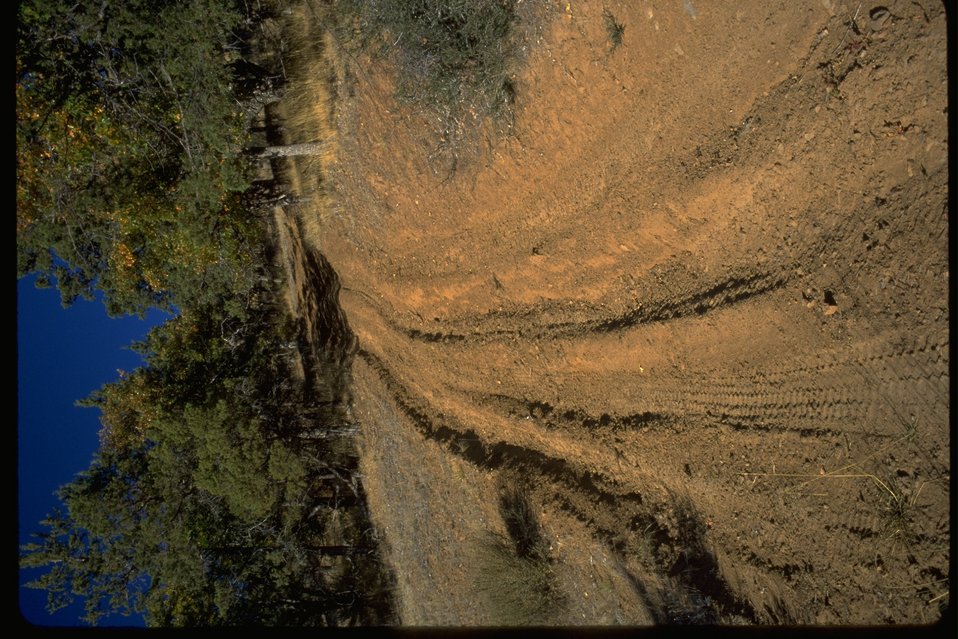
Switchback cutoff on Schoheim Road.